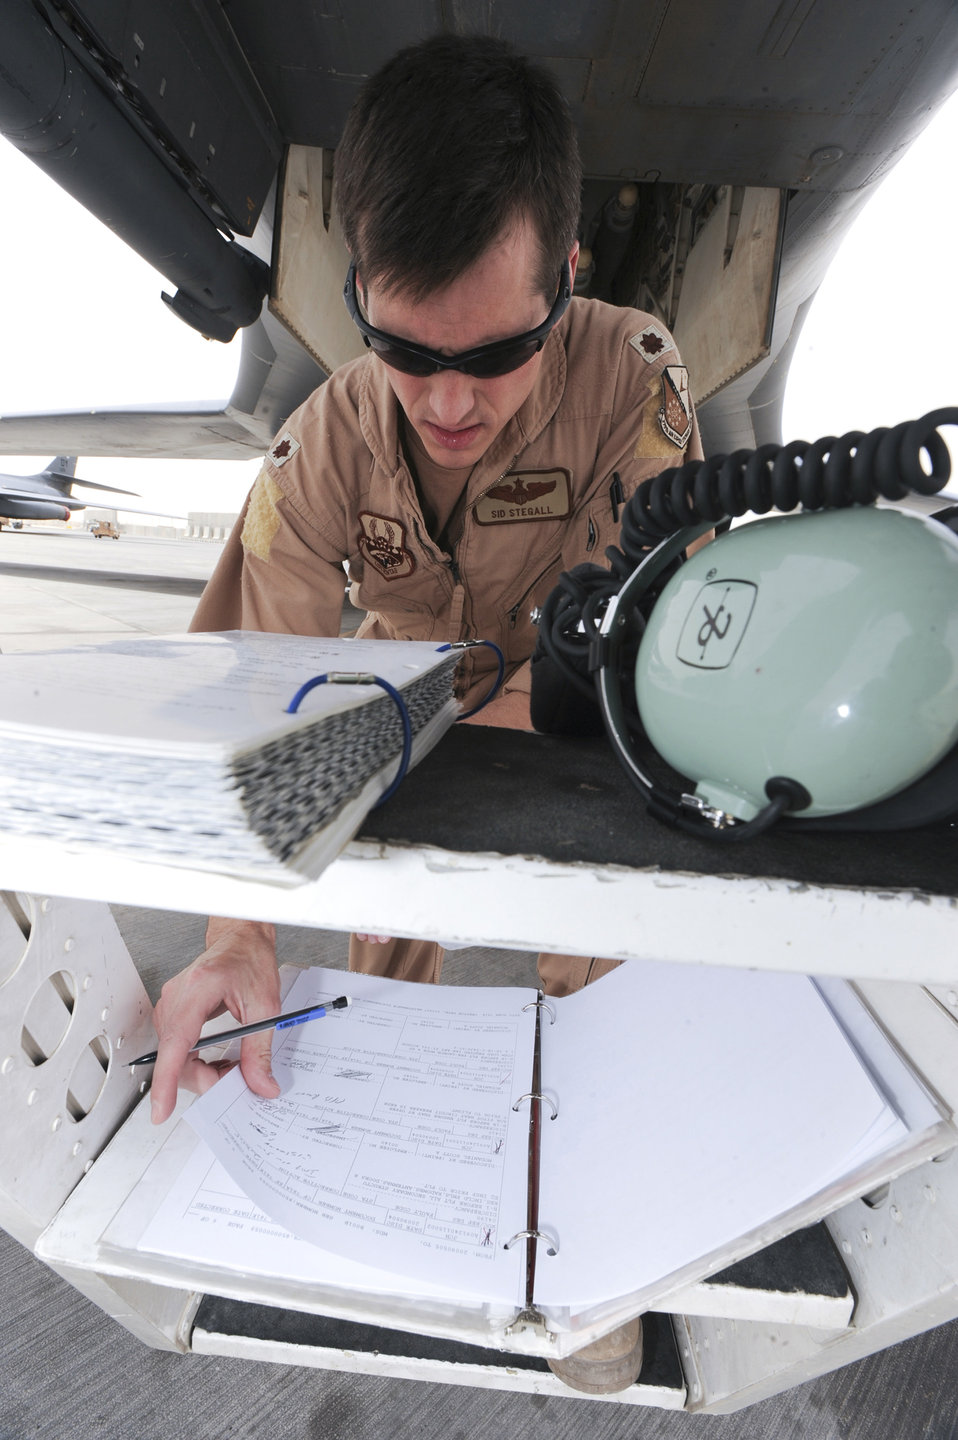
B-1B makes impact throughout Southwest Asia

Maj. Sid Stegall reviews the maintenance paperwork prior to performing preflight checks on a B-1B Lancer May 5 at an air base in Southwest Asia. The maintenance paperwork is reviewed to ensure the aircrew is aware of any discrepancies with the aircraft prior to performing preflight checks. Major Stegall is a 9th Expeditionary Bomb Squadron instructor pilot. He is a native of Pine Log, Ga., and deployed from Dyess Air Force Base, Texas.